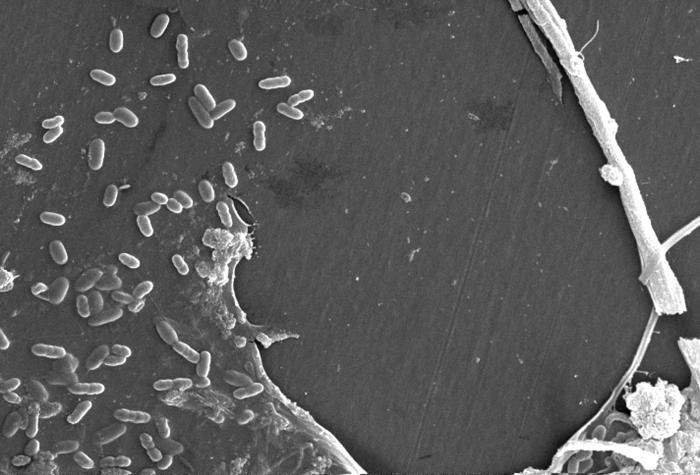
This scanning electron micrograph (SEM) of an untreated water specimen extracted from a wild stream mainly used to control flooding during inclement weather, revealed the presence of unidentified organisms, which included bacteria, protozoa, and algae. In this particular view, a mass of gelatinous biofilm had enmeshed numbers of microorganisms, including amoebae and bacteria. Note at right, the stalk of what is suspected to be an algal specie. For a colorized view of this image see PHIL 11705.